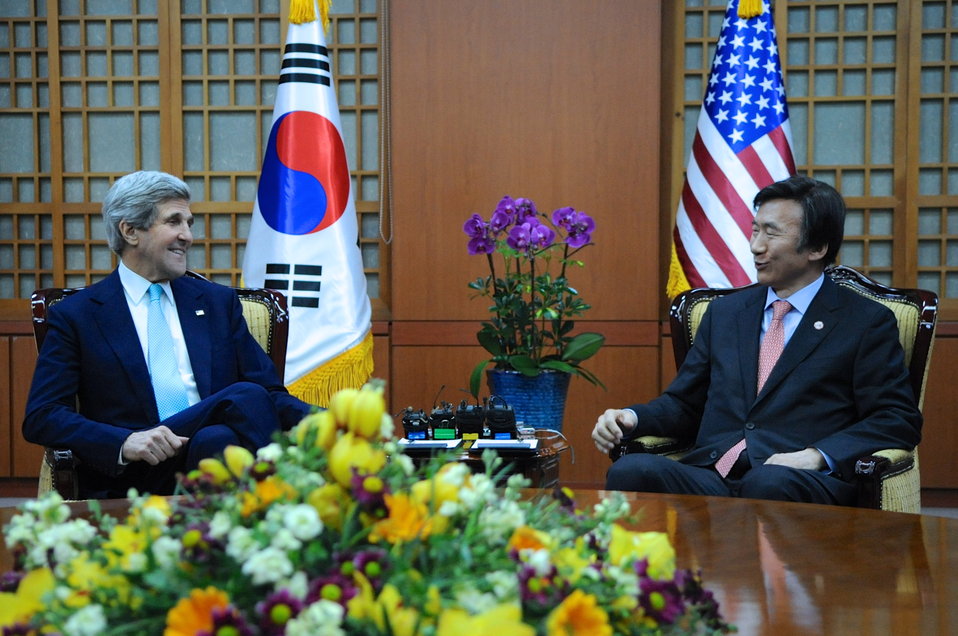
Secretary Kerry Meets With South Korean Foreign Minister Yun

U.S. Secretary of State John Kerry speaks with South Korean Foreign Minister Yun Byung-se at the outset of a bilateral meeting in Seoul, South Korea on February 13, 2014.